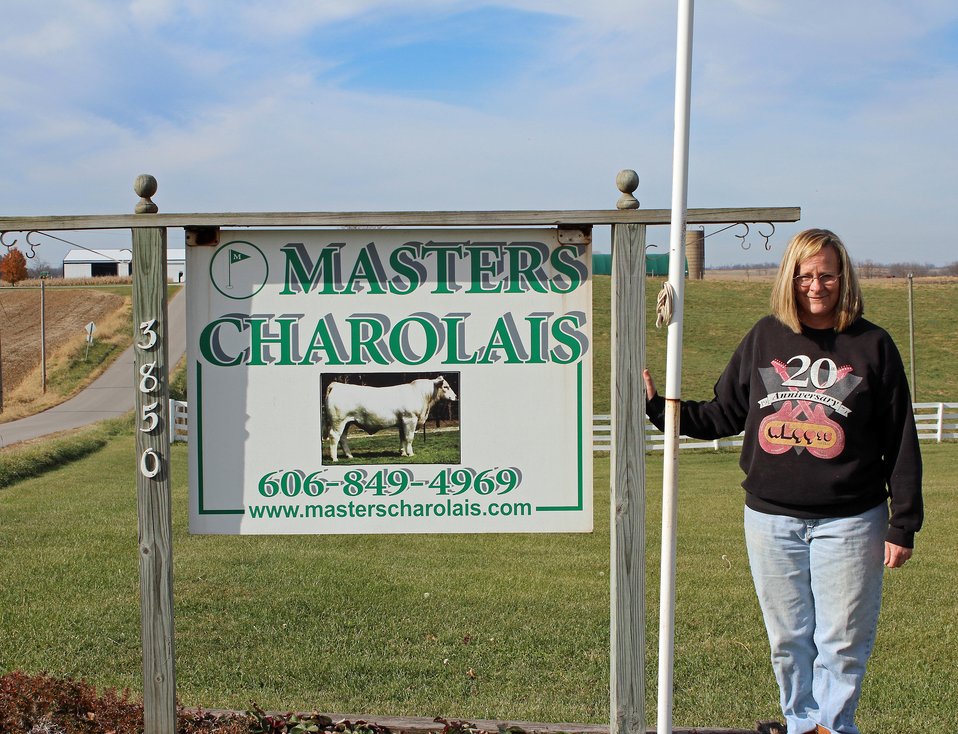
Masters CSP 2138a

Masters Charolais Farm owner and retired educator Rose Ann Masters stands beside the entrance sign of her family’s farm in Mayslick, KY on Nov. 18, 2012. Rose Ann and her husband have been operation the farm since 2006.